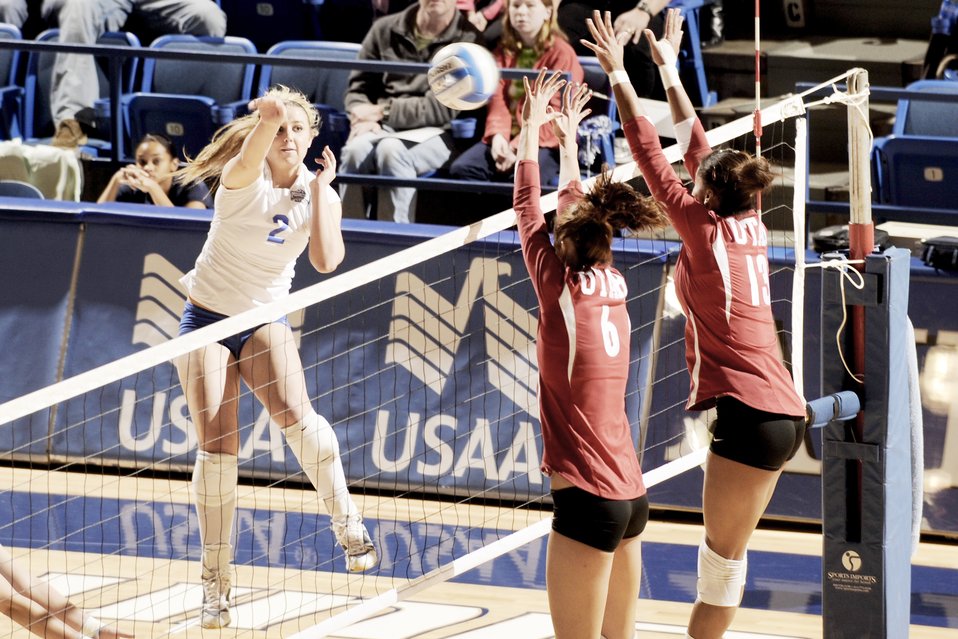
Academy women's volleyball team ends season

Falcon freshman Grace Konstanzer goes for the kill against Utah in Clune Arena Nov. 21, 2009, at U.S. Air Force Academy, Colo. The Falcons lost the three-set decision.